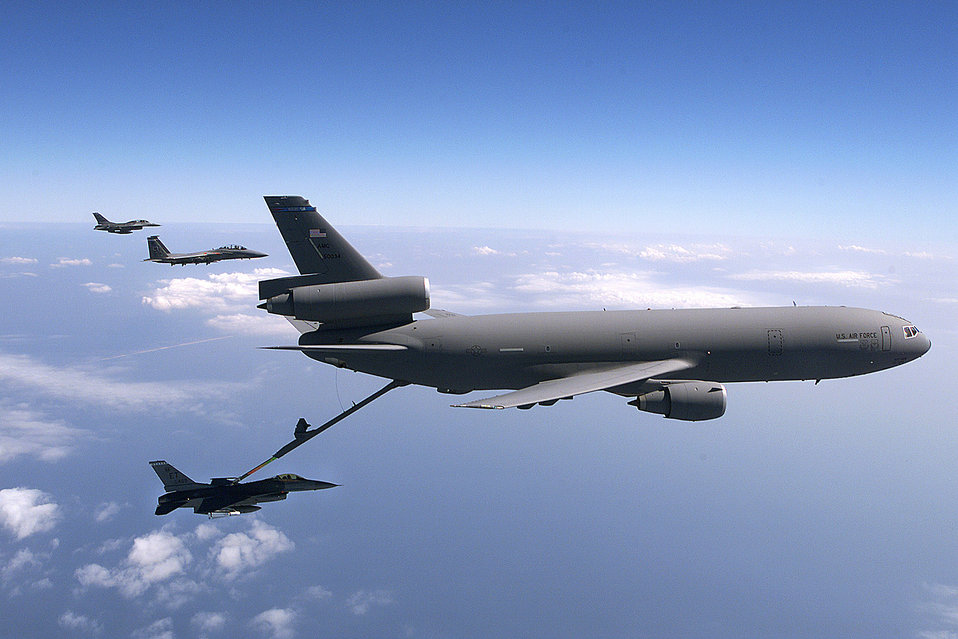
Thirsty Falcon flight

FILE PHOTO -- An F-16 Fighting Falcon from the 40th Flight Test Squadron, Eglin Air Force Base, Fla., refuels from a KC-10A Extender. The Extender is an Air Mobility Command advanced tanker and cargo aircraft designed to provide increased global mobility for U.S. armed forces.